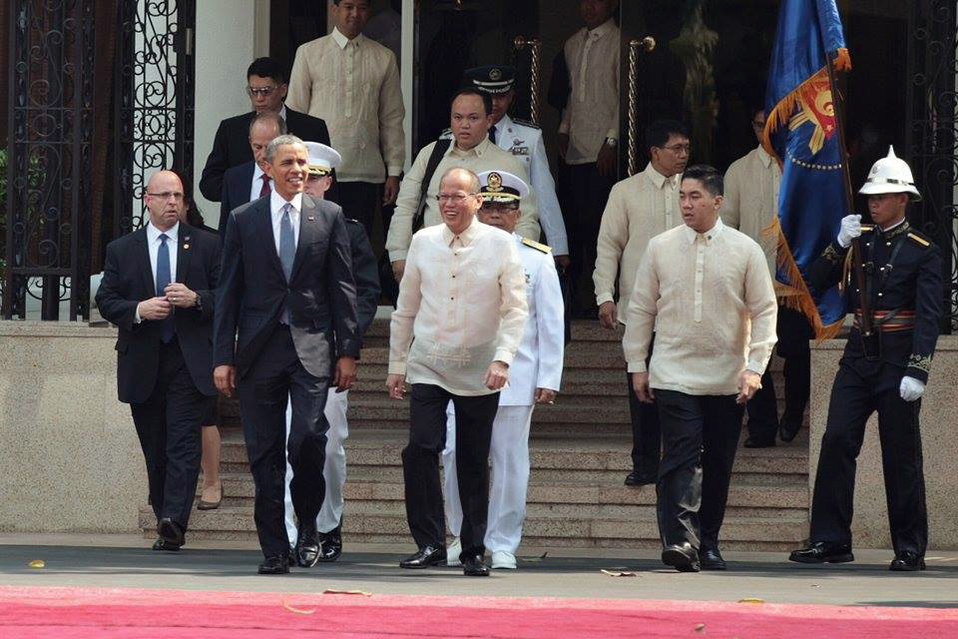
Presidents Obama and Aquino III at the Arrival Ceremony in Manila

U.S. President Barack Obama and Philippine President Benigno Aquino III walk during the arrival ceremony at the Malacañan Palace in Manila, Philippines, on April 28, 2014.